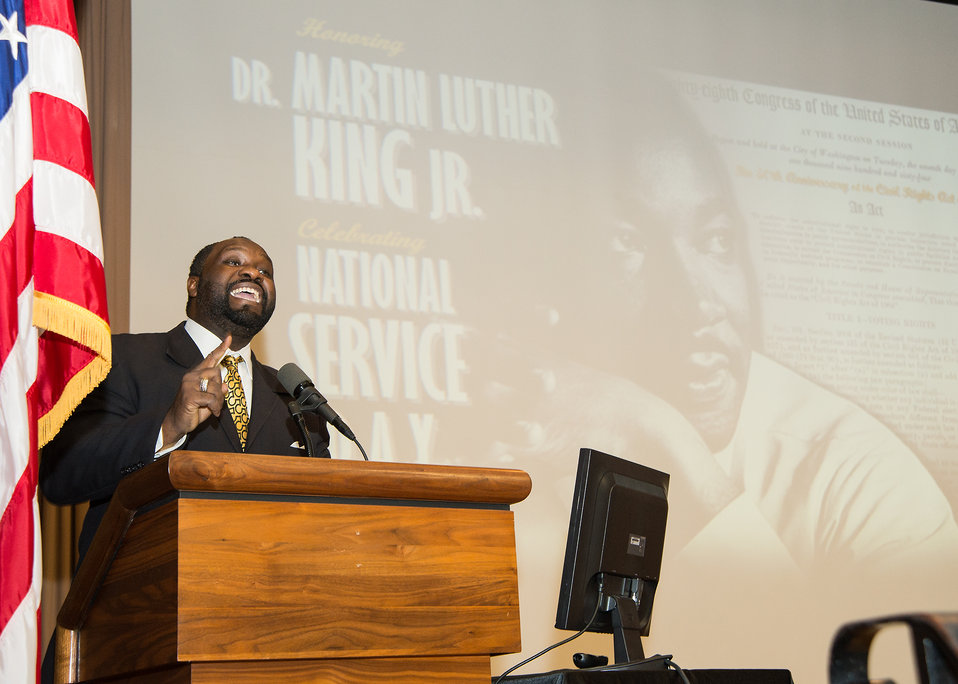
U.S. Department of Agriculture (USDA) Rural Development (RD) Human Resources Deputy Director Duane Williams acts as the Master of Ceremonies at USDA's Dr. Martin Luther King Jr. and National Service Day in Washington, D.C. on Wednesday, Jan. 15, 2014.